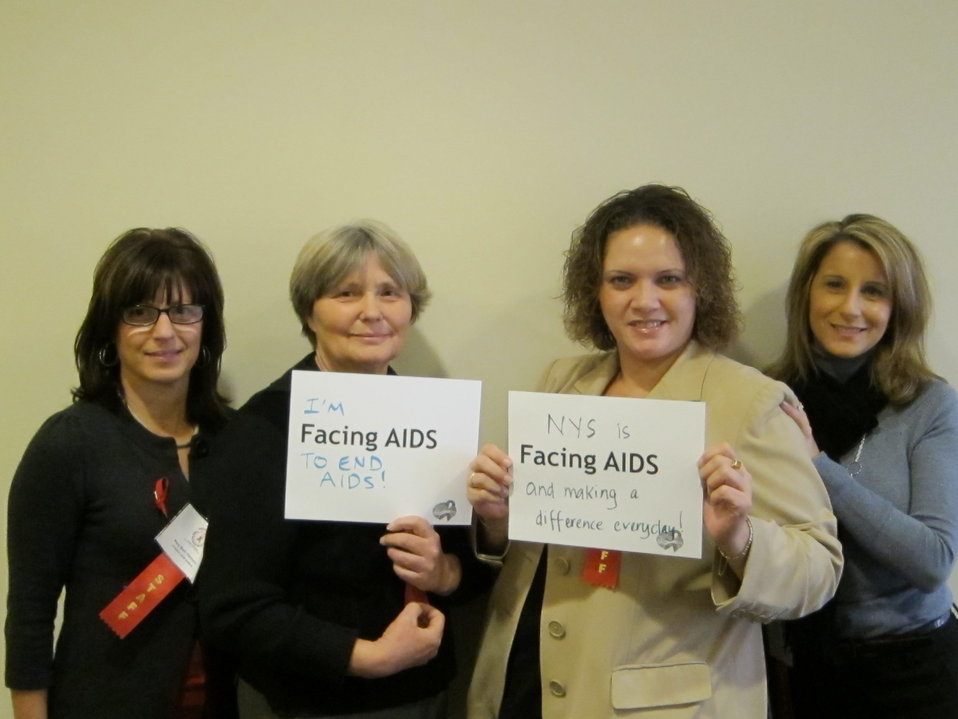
I'm Facing AIDS to end AIDS. NYS is Facing AIDS and making a difference every day.